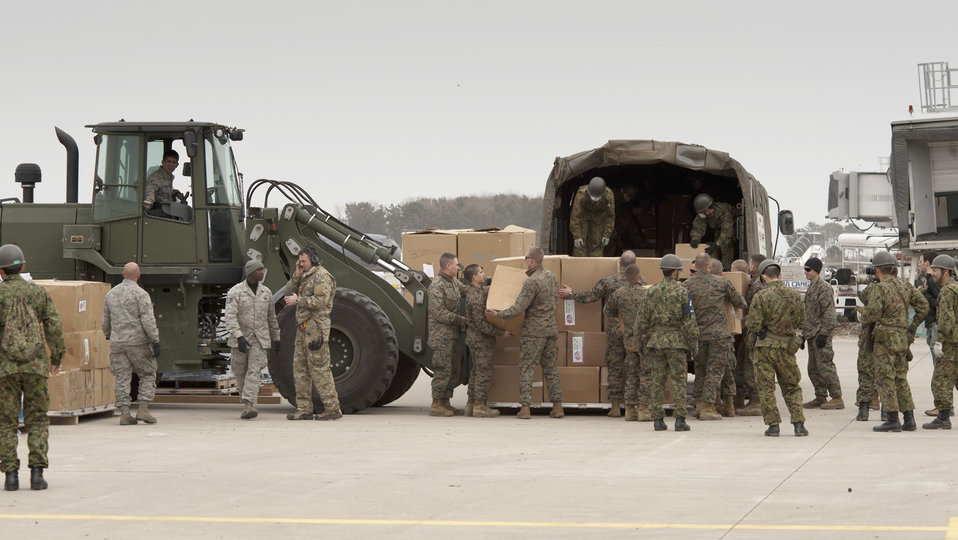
AFSOC aids Operation Tomodachi

Airmen, Marines and Japan Ground Self-Defense Force soldiers load cargo onto a JGSDF truck March 20, 2011, at Sendai Airport, Japan. Since the re-opening of Sendai Airport March 16, humantitarian aid supporting Operation Tomodachi has been able to be airlifted in more quickly and directly.